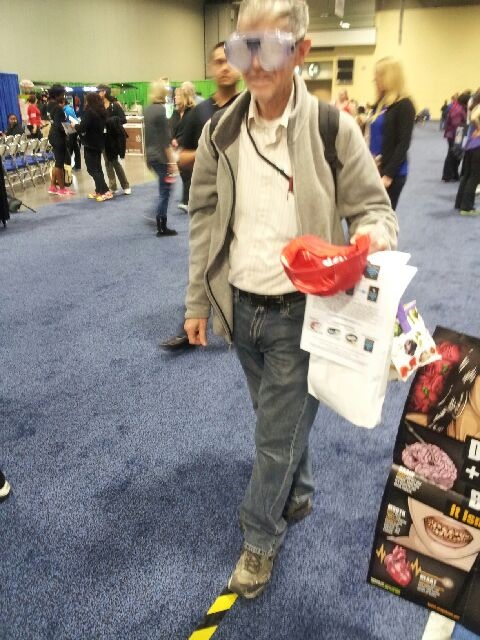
NBC4 Health and Wellness Expo January 11-12, 2014 110407